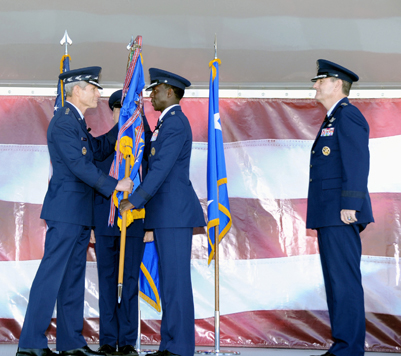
New AETC commander

Air Force Chief of Staff Gen. Norton Schwartz (left) presents Gen. Edward A. Rice Jr. (center) with the Air Education and Training Command colors during a change of command ceremony Nov. 17, 2010, at Randolph Air Force Base, Texas. General Rice succeeded Gen. Stephen R. Lorenz (right) as AETC commander.